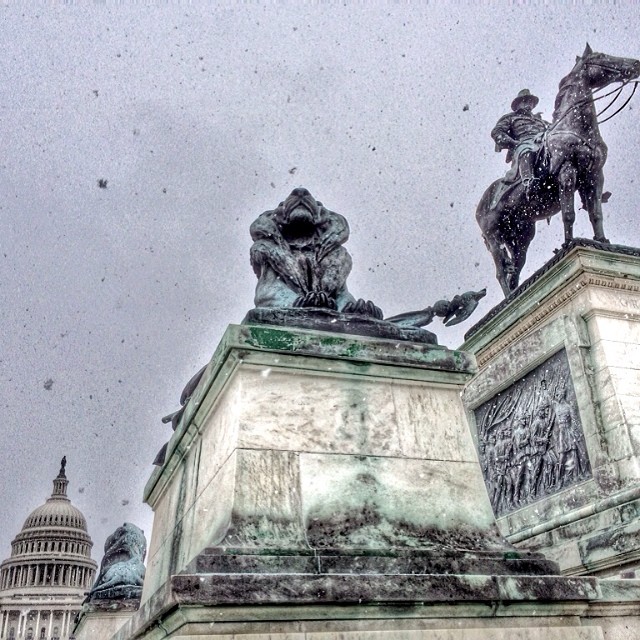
Snow in #DC - again.